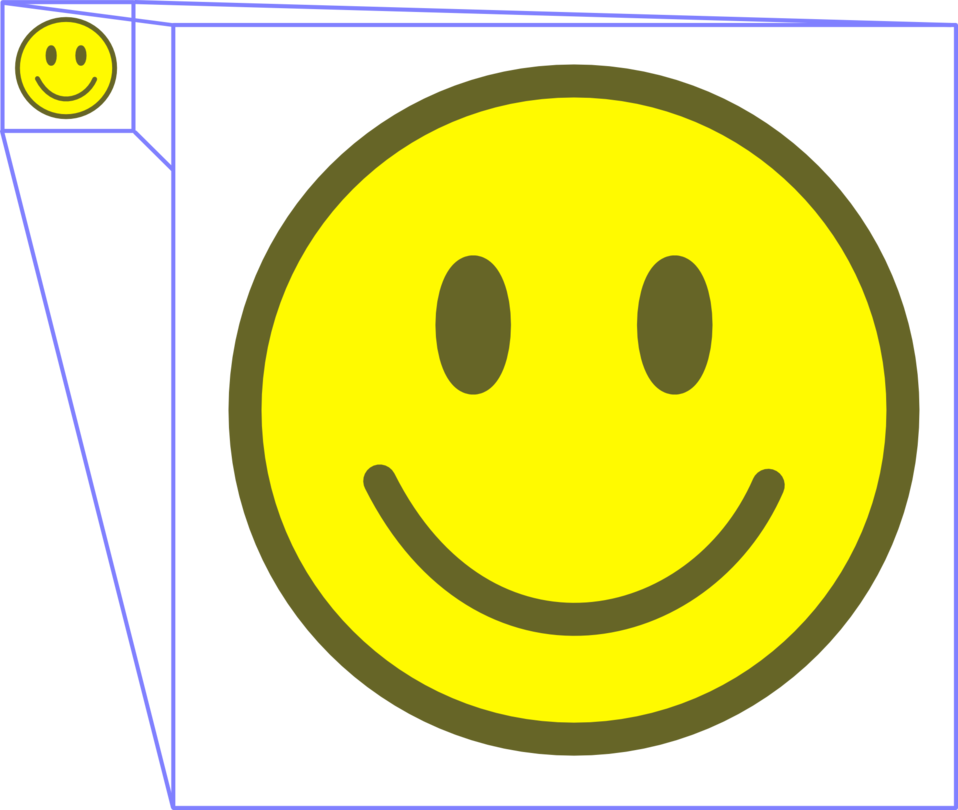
Created in en:Inkscape, showing expansion of svg file.